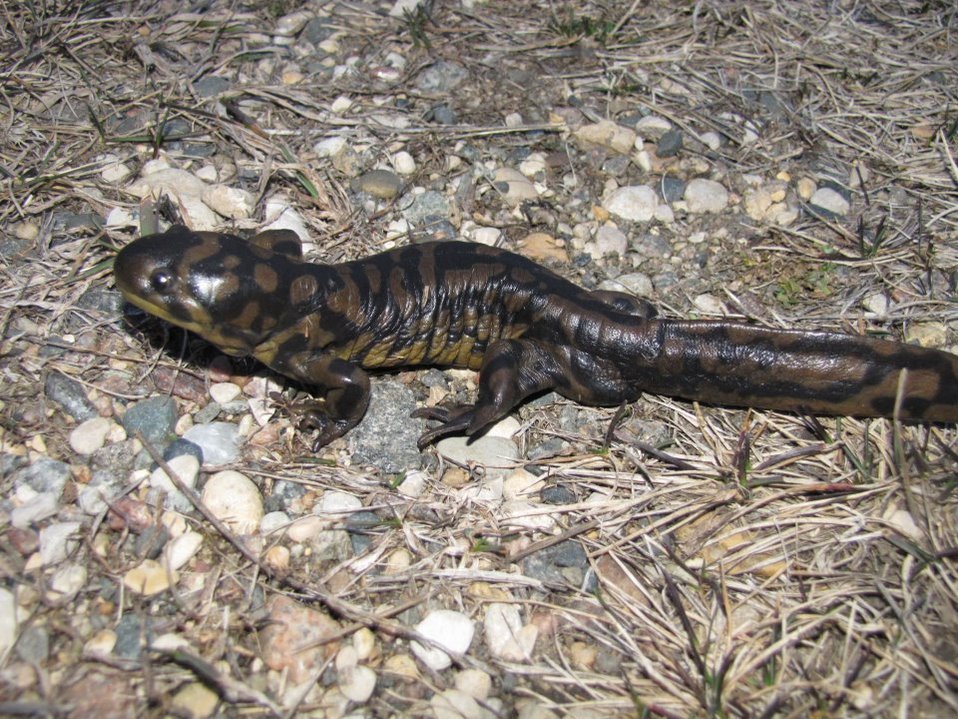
Tiger Salamander

Prairie Wetlands Learning Center, Minnesota
March 2012
USFWS

Tiger salamanders are also emerging from hibernation this week. With the warm temps and rain, they're moving from the prairie to wetlands to breed.